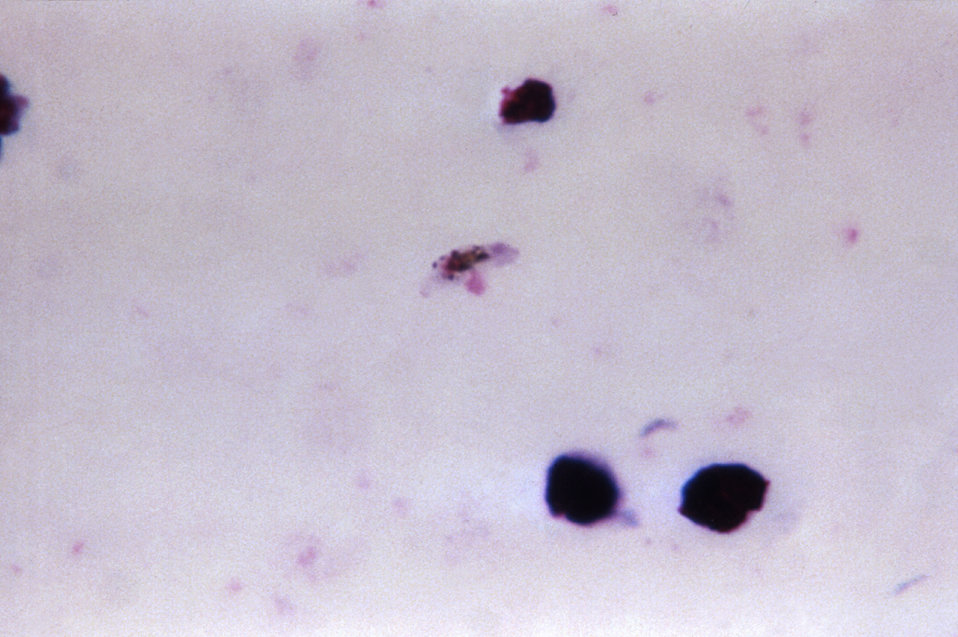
His thick film blood smear photomicrograph reveals an elongated Plasmodium falciparum gametocyte.